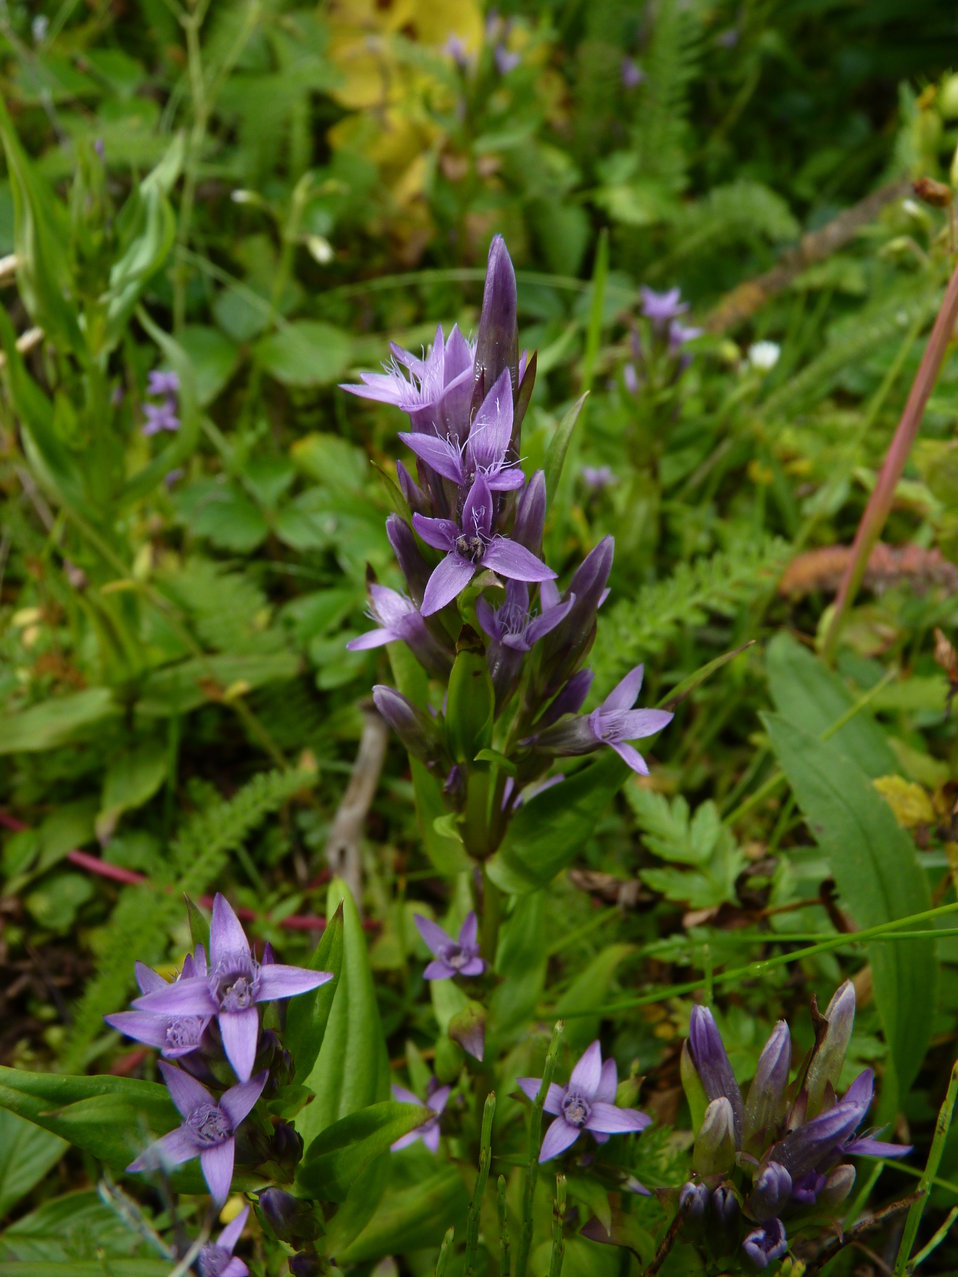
Gentian

Izembek National Wildlife Refuge